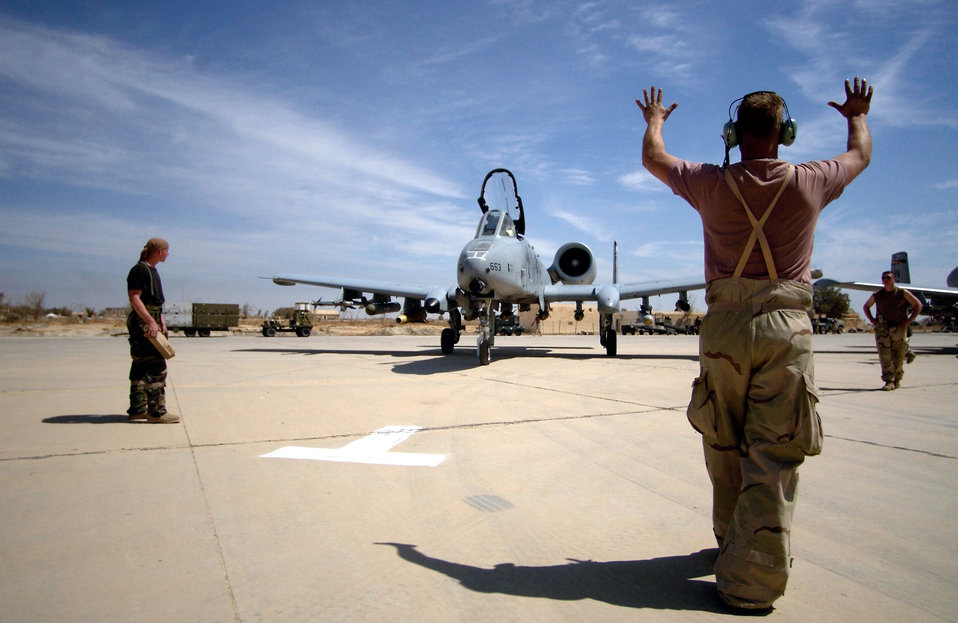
Park it

OPERATION IRAQI FREEDOM -- A crew chief from the 392nd Air Expeditionary Wing marshals an A-10 Thunderbolt II to its parking spot April 3. The 392nd AEW is at a forward-deployed location in southern Iraq supporting Operation Iraqi Freedom.